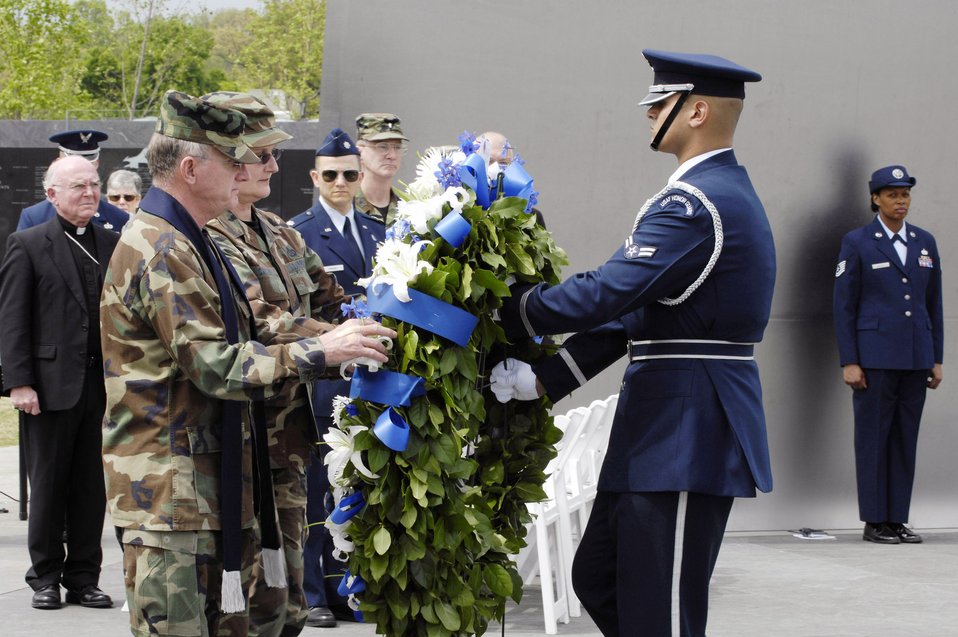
Honoring faithful service

Chaplain, Maj. Gen. Charles C. Baldwin and Chief Master Sgt. Kaye Carter lay a wreath during a memorial service Apr. 25 at the Air Force Memorial in Arlington, Va. The memorial service was held to honor chaplains and chaplain's assistants who have served and are serving in the Air Force.